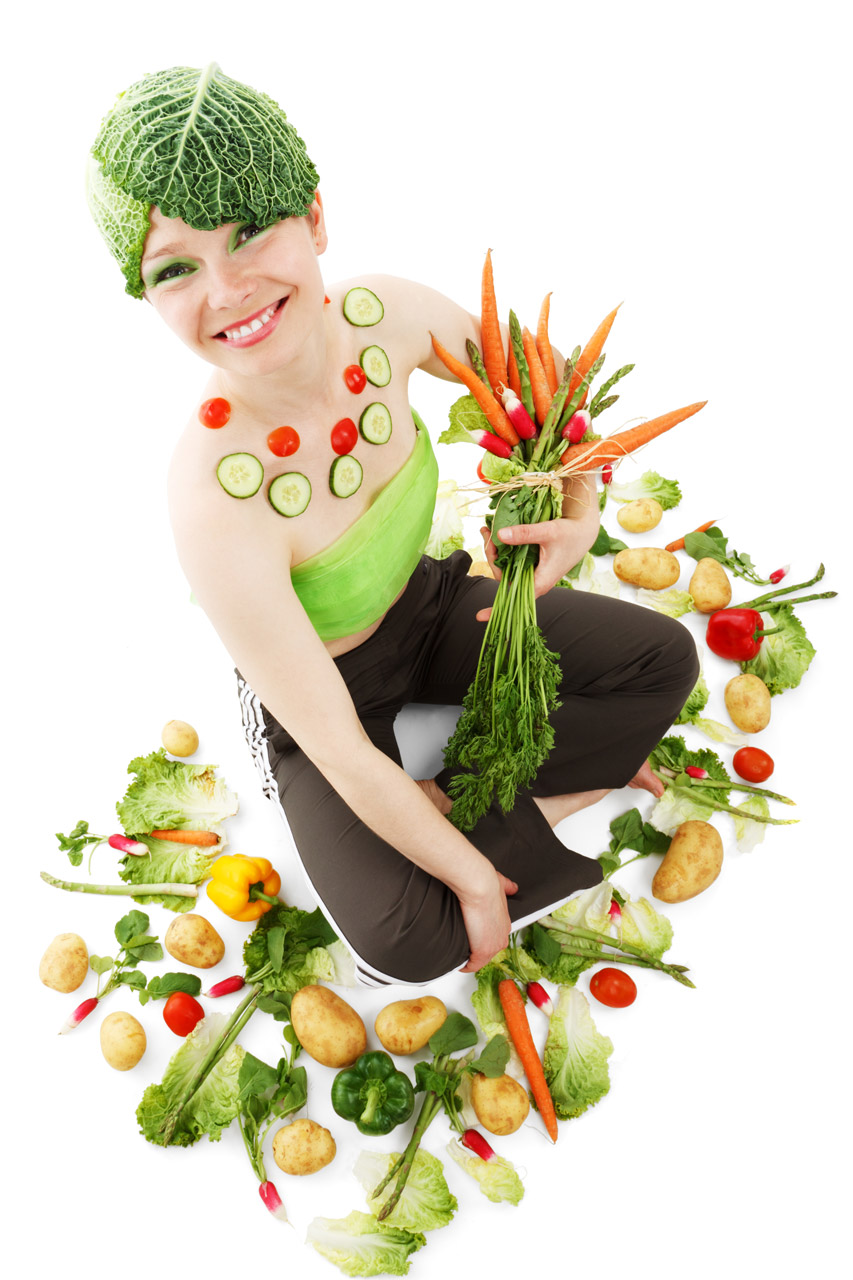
Vegetable fairy

Young woman surrounded by colorful vegetable isolated on white background - jana svojsova.